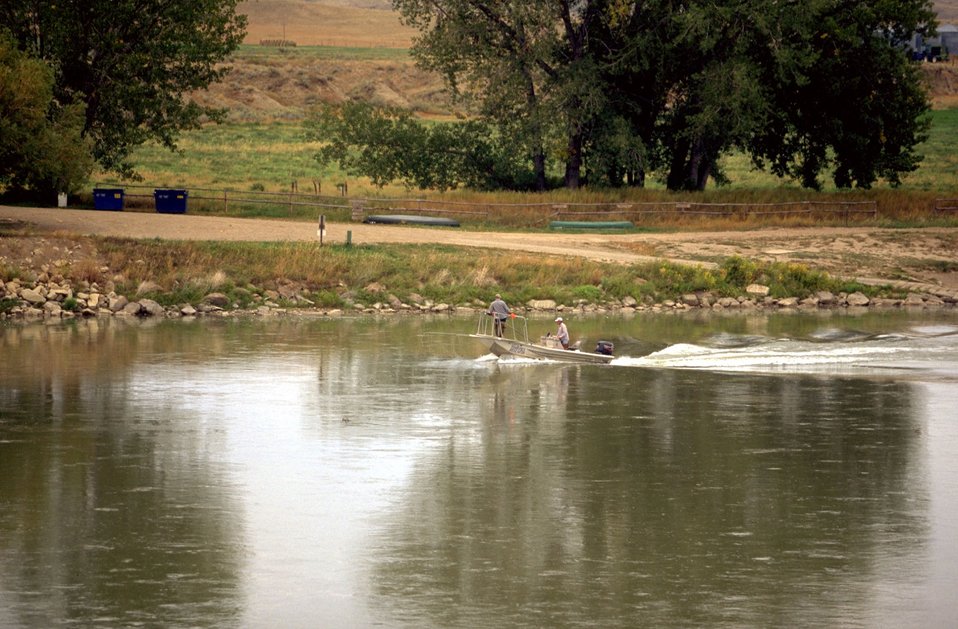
Judith Landing along Upper Missouri National Wild and Scenic River